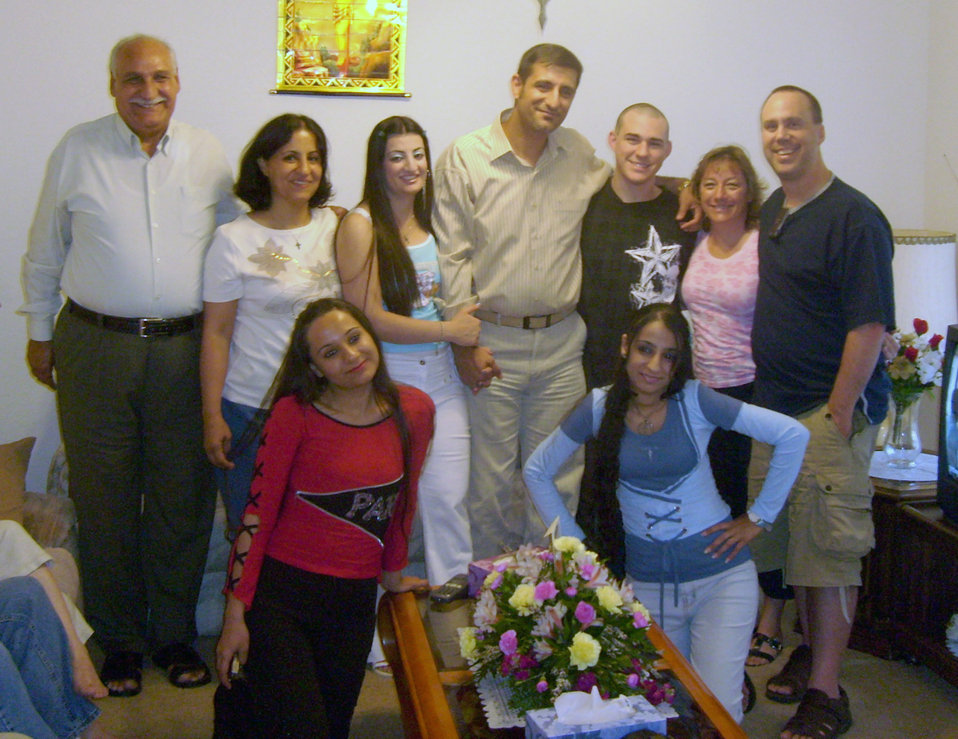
Airman helps Iraqi family to safety in U.S.

Surrounded by his family and friends, Vincent Talia (center) and his wife Nouras, celebrated their first American wedding anniversary in Colorado. The celebration was attended by Master Sgt. Greg Jensen (far right) and his family. Sergeant Jensen helped Mr. Talia, an Iraqi citizen, to obtain an American visa through a special program for armed forces interpreters. The two worked together in Basra in support of Operation Iraqi Freedom during 2006.